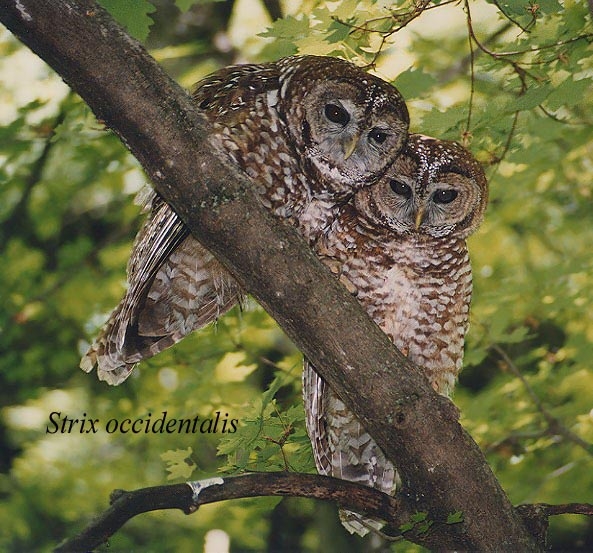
Pair of Northern Spotted Owls